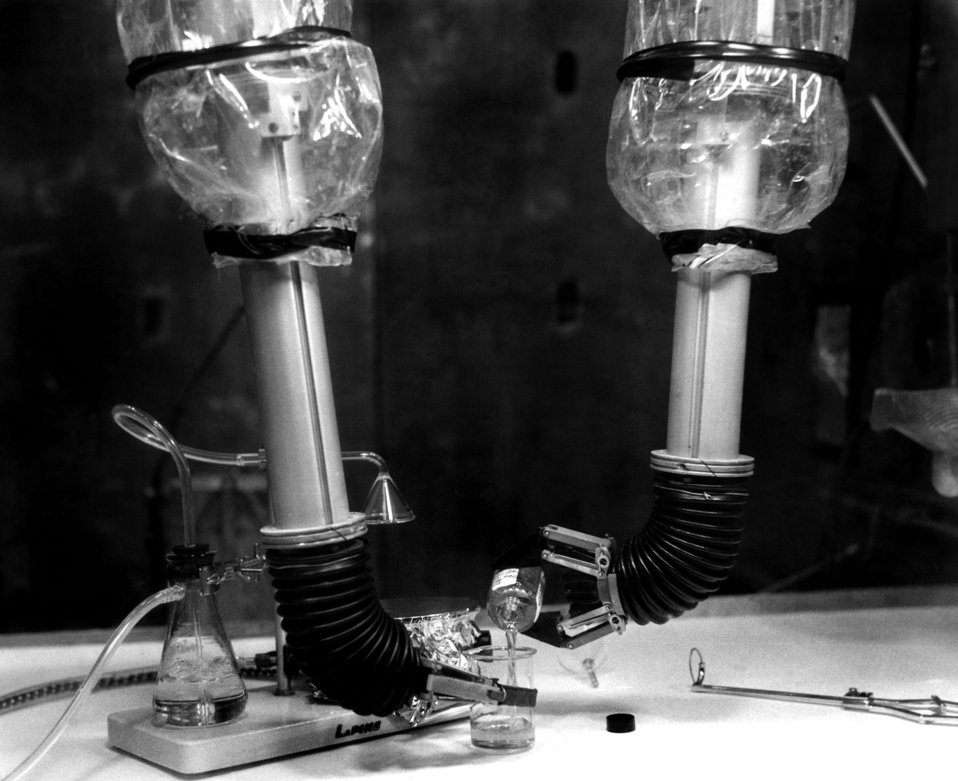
Mechanical Arms Used in Hot Cells ORNL Oak Ridge

57-1560-CF DOE photo Ed Westcott This scene shows the remarkable dexterity which can be obtained when using master slave manipulators in a 'hot cell.' Equipment such as this is necessary to allow technicians to perform intricate work, peering trough viewing windows, while protected from radiation by heavy shielding. These mechanical arms are in use at the Atomic Energy Commission's Oak Ridge National Laboratory. Oak Ridge Tennessee